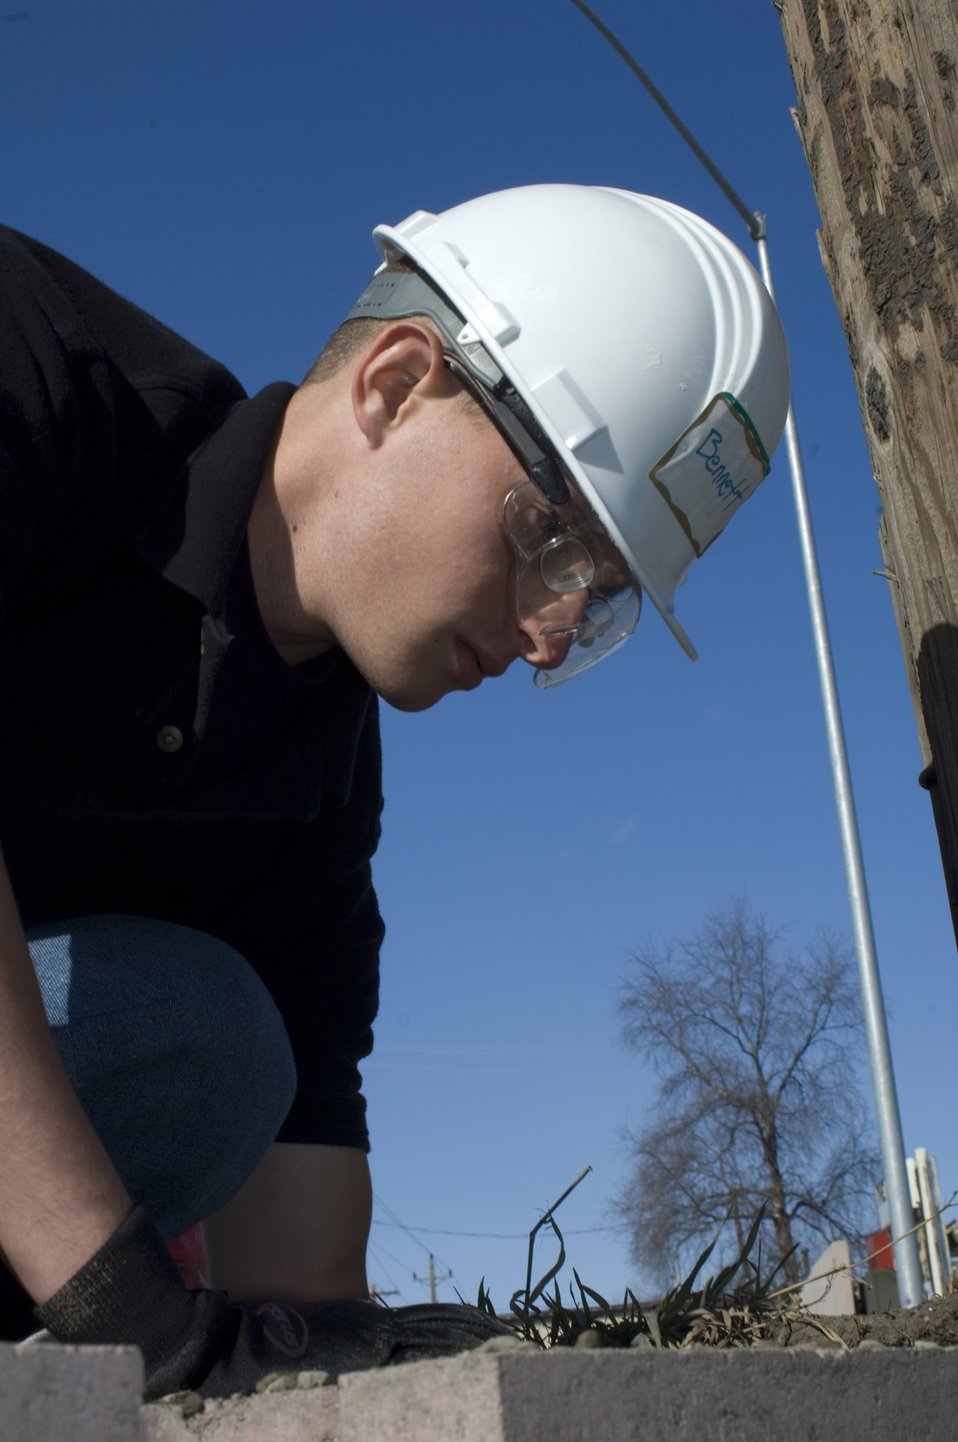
Elmendorf Airmen lend a hand

Airman 1st Class Thomas Bennett fills in the gaps between cinder blocks at a Habitat for Humanity work site May 3 at Anchorage, Alaska. Airman Thomas is a former student at the First Term Airman Center and a member of the 381st Intelligence Squadron at Elmendorf Air Force Base, Alaska.